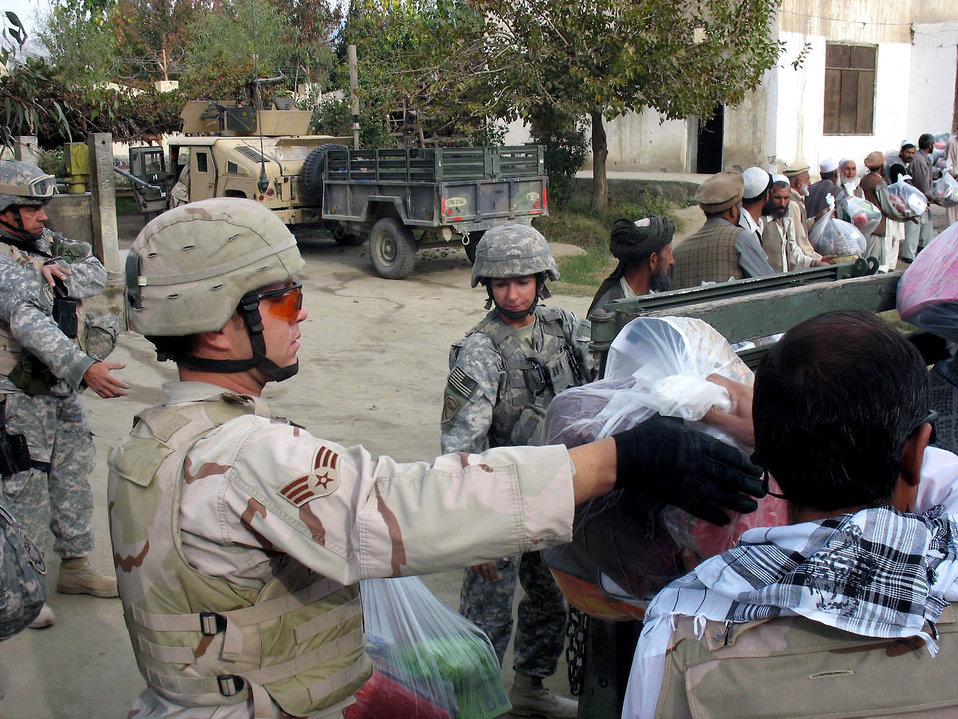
Afghan reconstruction team brings supplies to orphans

Senior Airman Anthony Perasso unloads supplies during a humanitarian assistance mission Nov. 27 to the Rosantoon Orphan Girl's School in Mehtar Lam City, Laghman Province, Afghanistan. The Mehtar Lam Provincial Reconstruction Team delivered three trailers full of supplies, including food and winter clothing. Airman Perasso is a Humvee driver for the PRT.